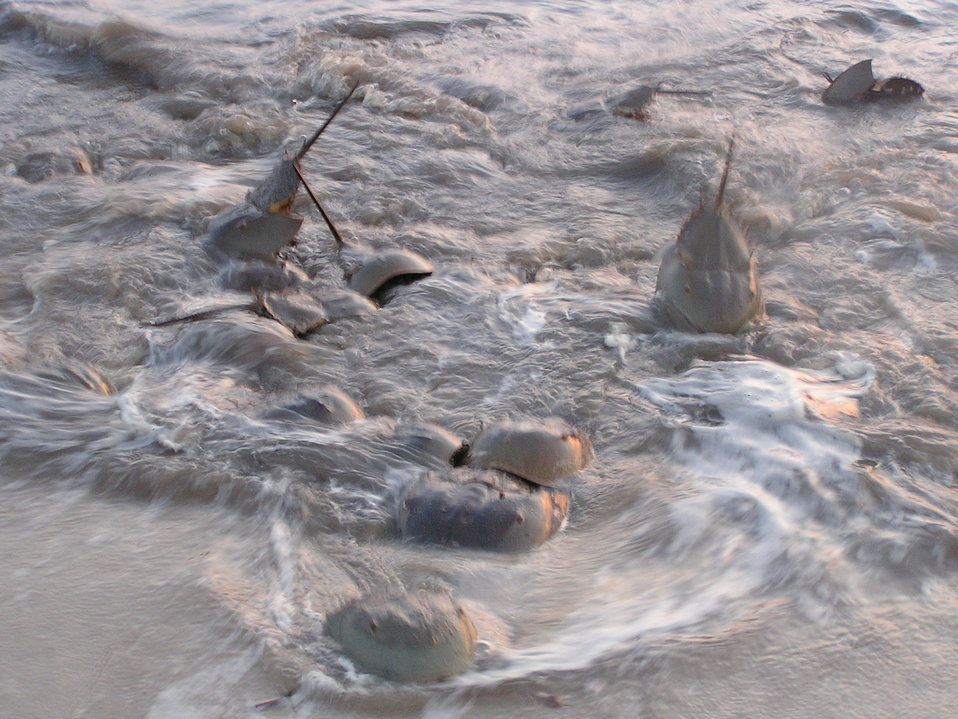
Horseshoe crabs at Cape May National Wildlife Refuge.